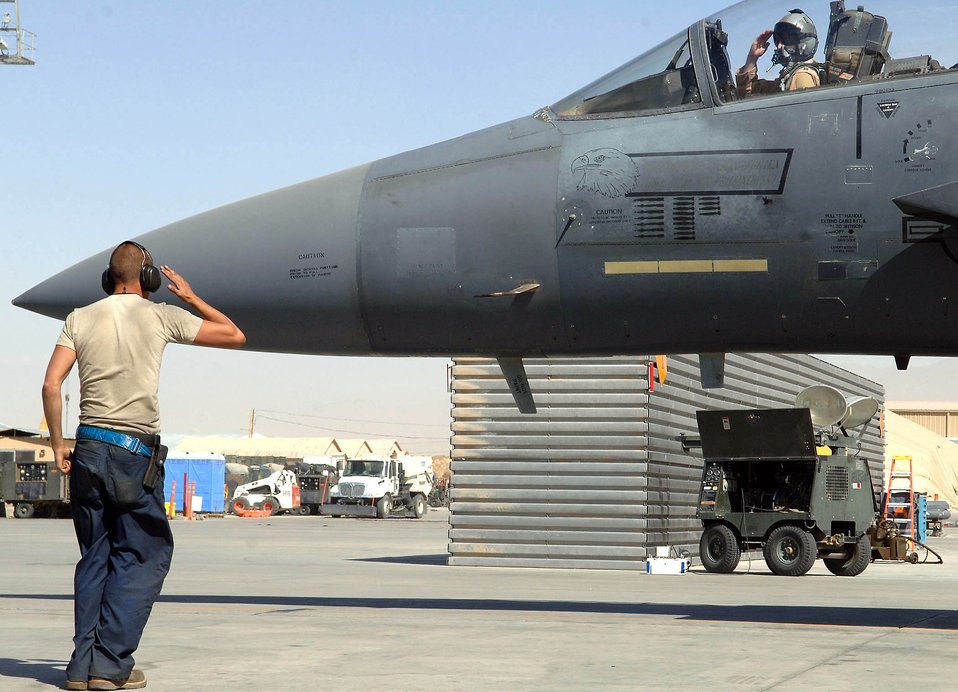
May 27 airpower summary: F-15Es destroy enemy combatants

An F-15E Strike Eagle crew chief salutes the pilot prior to his flight from Bagram Airfield, Afghanistan. The F-15Es are stationed here providing close-air support for troops on the ground.